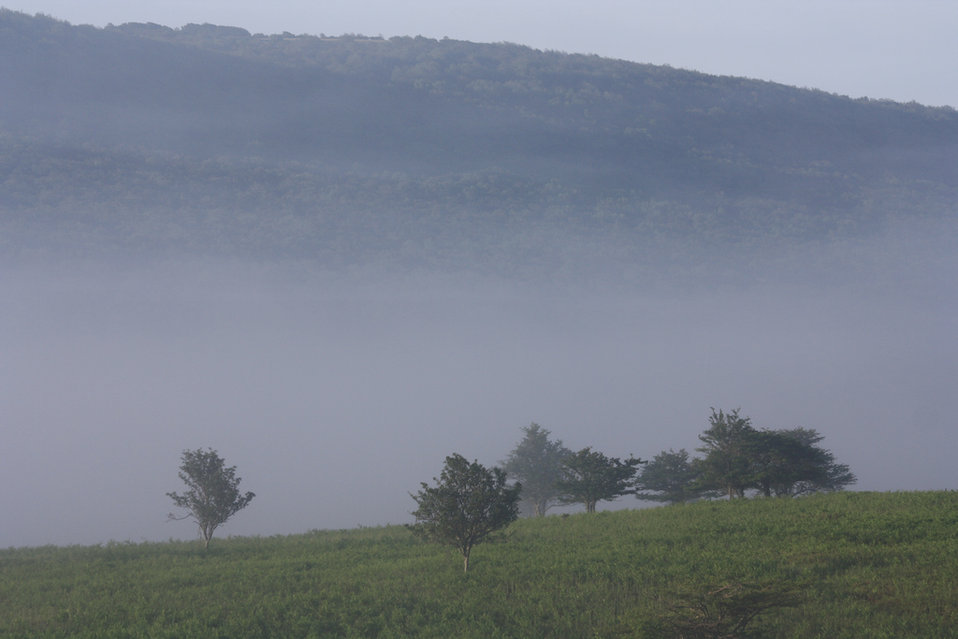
Middle Valley Mist

Canaan Valley National Wildlife Refuge emerges from the fog on a mid-summer morning.